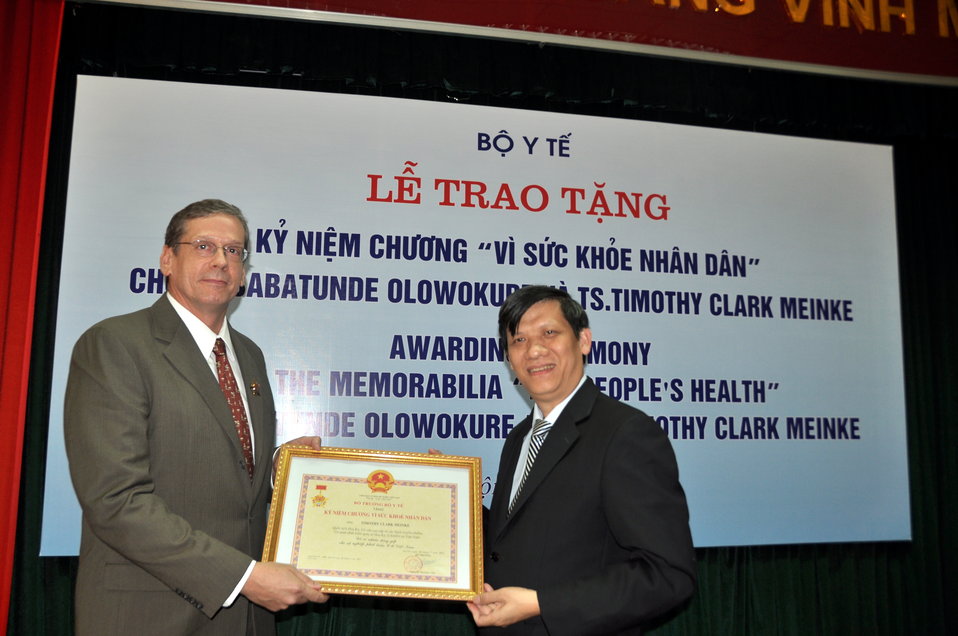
Ministry of Health awards Dr. Timothy Meinke of USAID the ‘Memorabilia for People’s Health’

On behalf of Vietnam’s Ministry of Health, Vice Minister of Health Prof. Nguyen Thanh Long (right) awards Dr. Timothy Meinke, USAID’s Senior Infectious Diseases Advisor, the “Memorabilia for People’s Health” in recognition of his valuable contributions to Vietnam’s Health System in general and infectious diseases control in particular.

Hanoi, October 28, 2013.